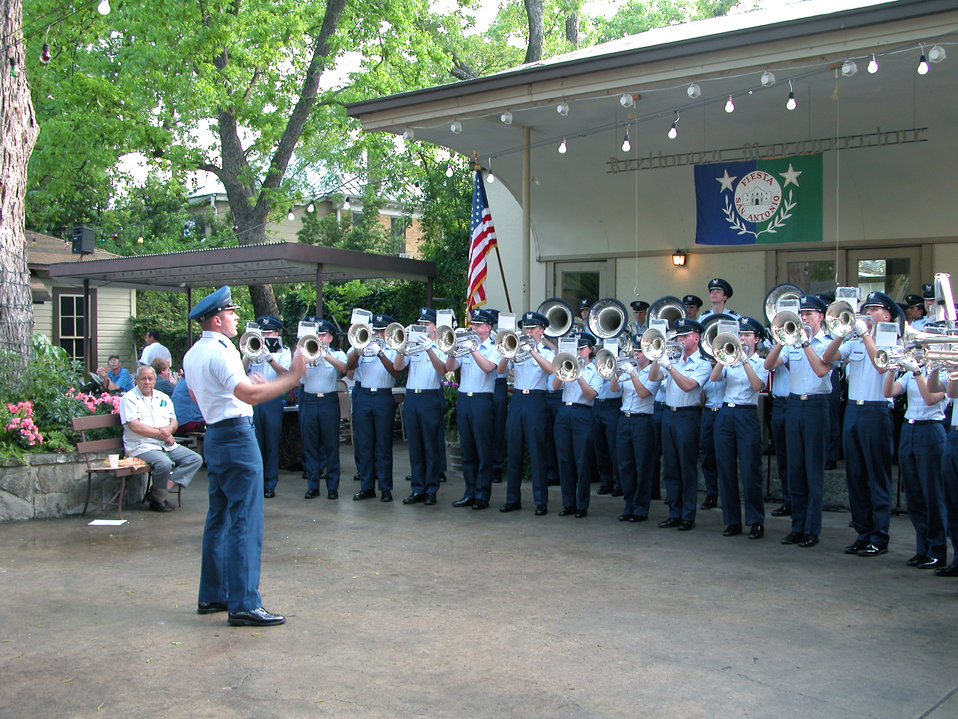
Fiesta music

SAN ANTONIO -- Cadet 2nd Class Nate Faggert, drum major for the U.S. Air Force Academy Drum and Bugle Corps, leads a medley of service songs here April 23 during a Fiesta event. The group marched in the annual Fiesta Battle of Flowers parade and performed at several Fiesta venues.